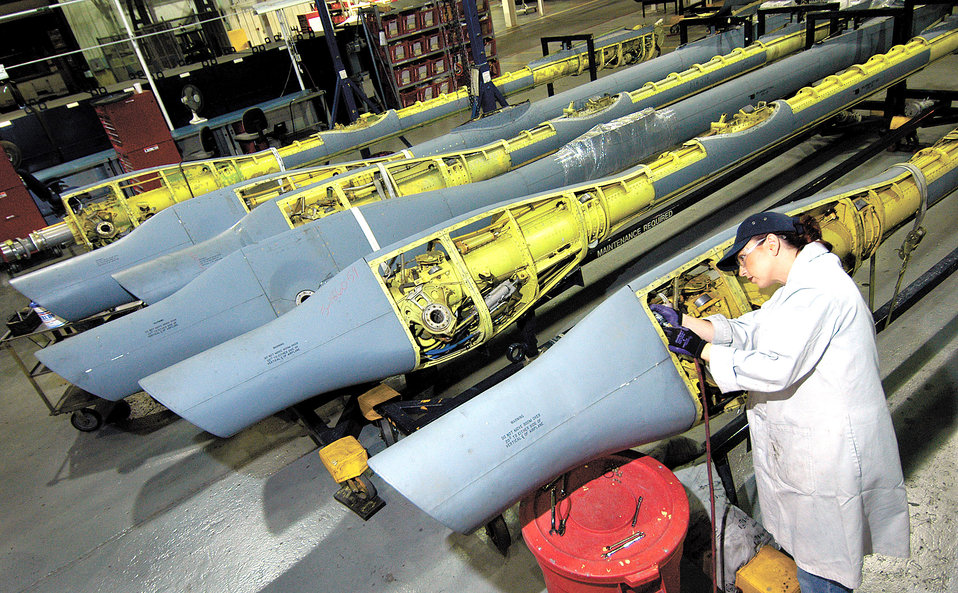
Tanker contract award announced

TINKER AIR FORCE BASE, Okla. -- Michelle Henn works in the tear down area of the overhaul shop here, disconnecting hydraulic and electrical lines and removing the tail cone of a KC-135 Stratotanker's refueling boom.